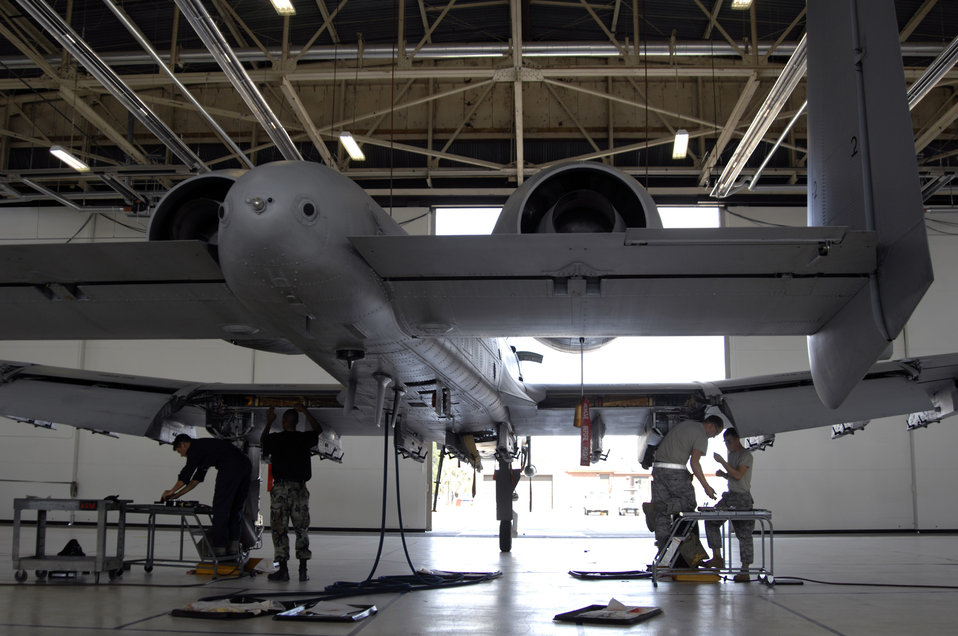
ACC maintainers expedite A-10 inspection actions

Maintainers at Moody Air Force Base, Ga., prepare to inspect an A-10 Thunderbolt II for wing frame cracks Oct. 4. A Time Compliance Technical Order was issued by Air Force Materiel Command officials identifying certain A-10s that needed to be inspected. The Airmen are assigned to the 23rd Equipment Maintenance Squadron.